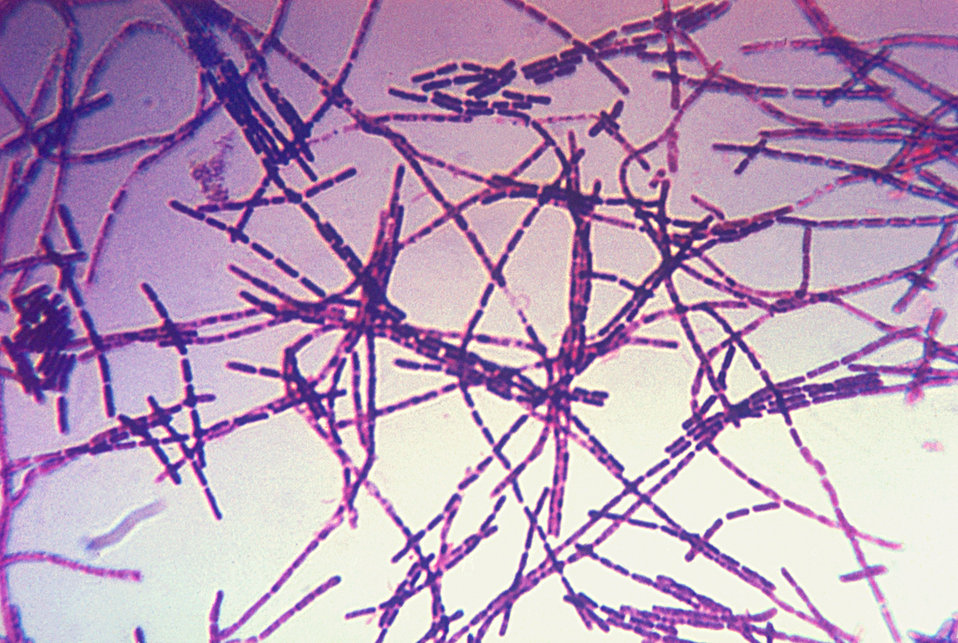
A photomicrograph of Bacillus anthracis bacteria using Gram-stain technique.